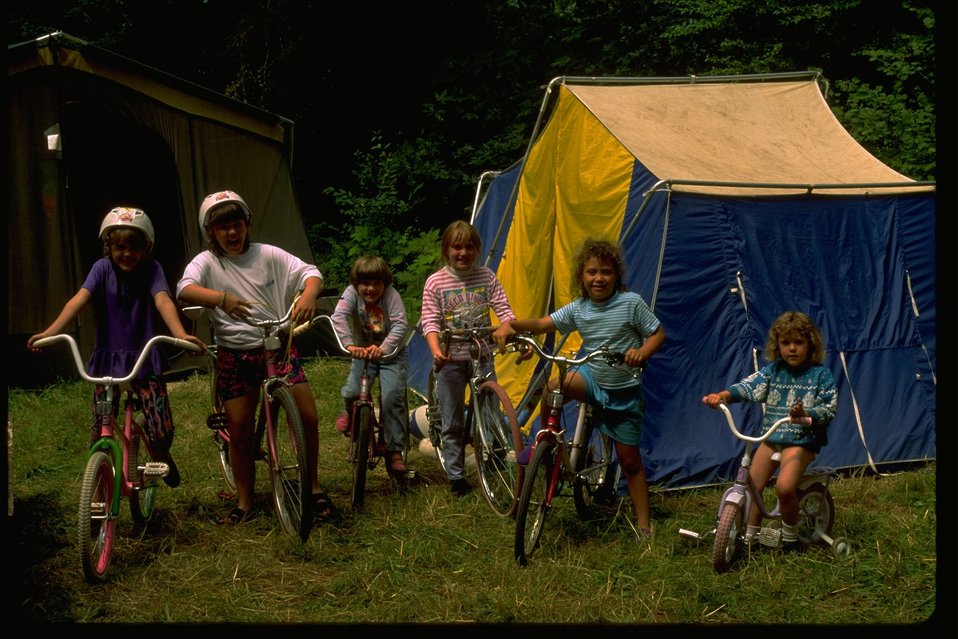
Playing and riding bicycles at Vincent Creek recreation area.